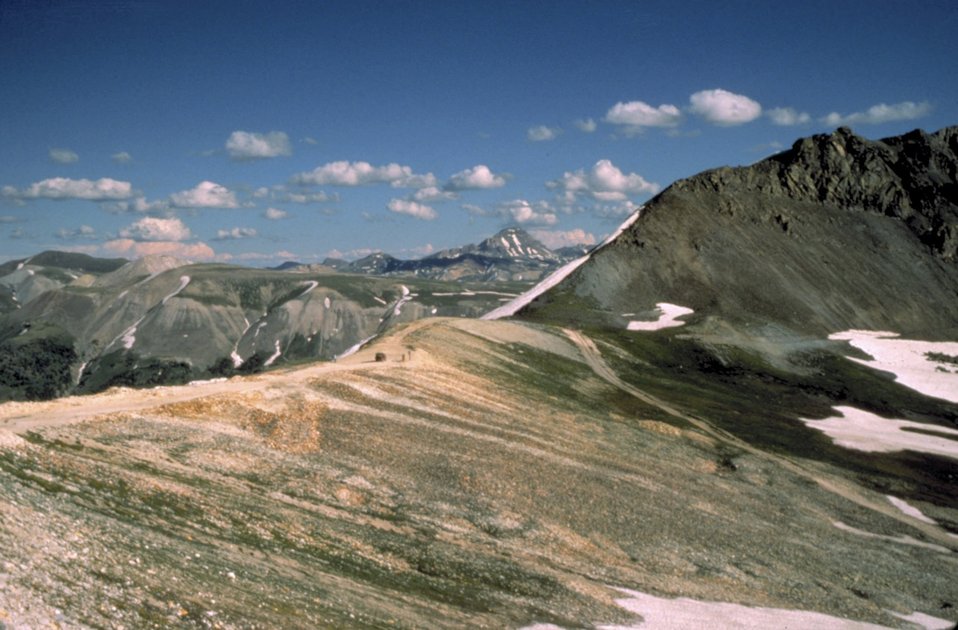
Back Country